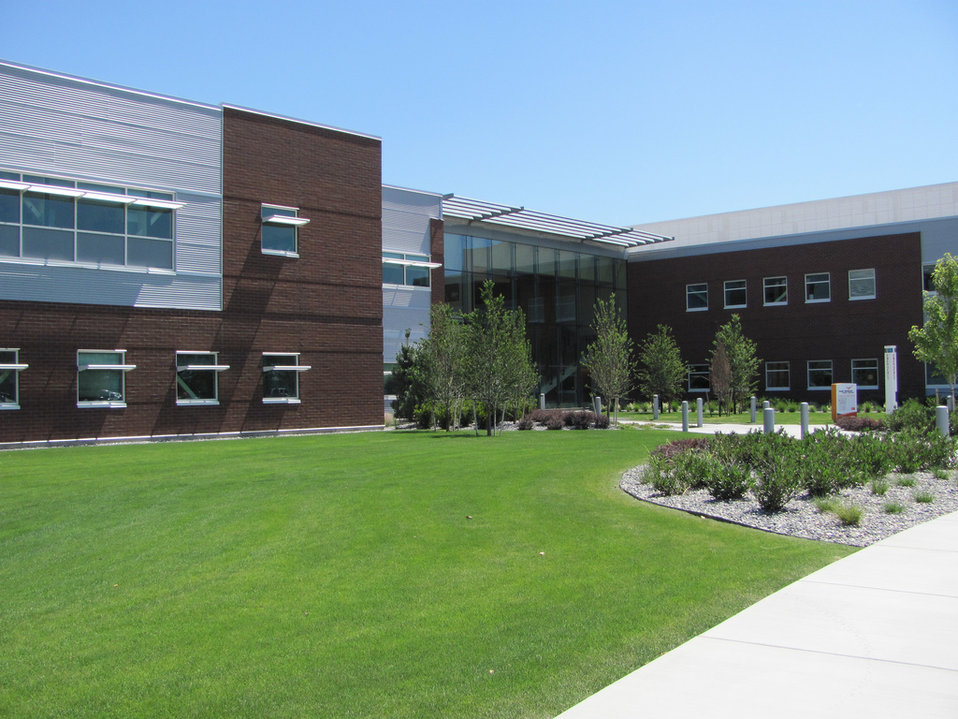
At PNNL, the Biological Sciences Facility and Computational Sciences Facility were dedicated in the Fall of 2009.
The new facilities will enable discoveries in biological, computational and subsurface sciences and developments in bioenergy, carbon sequestration and homeland security.